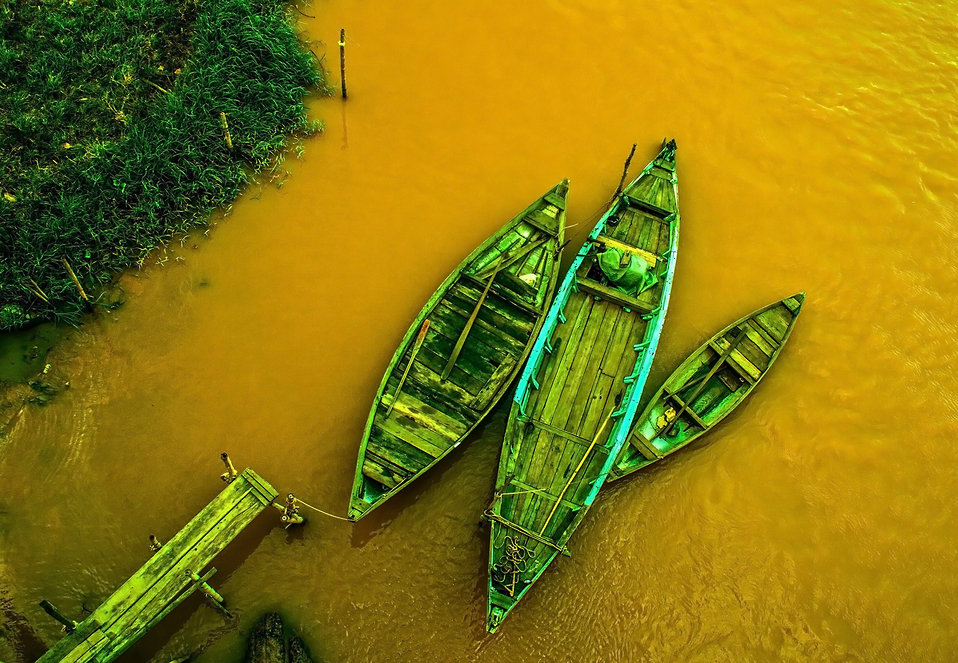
Small family

Some boat in the river..